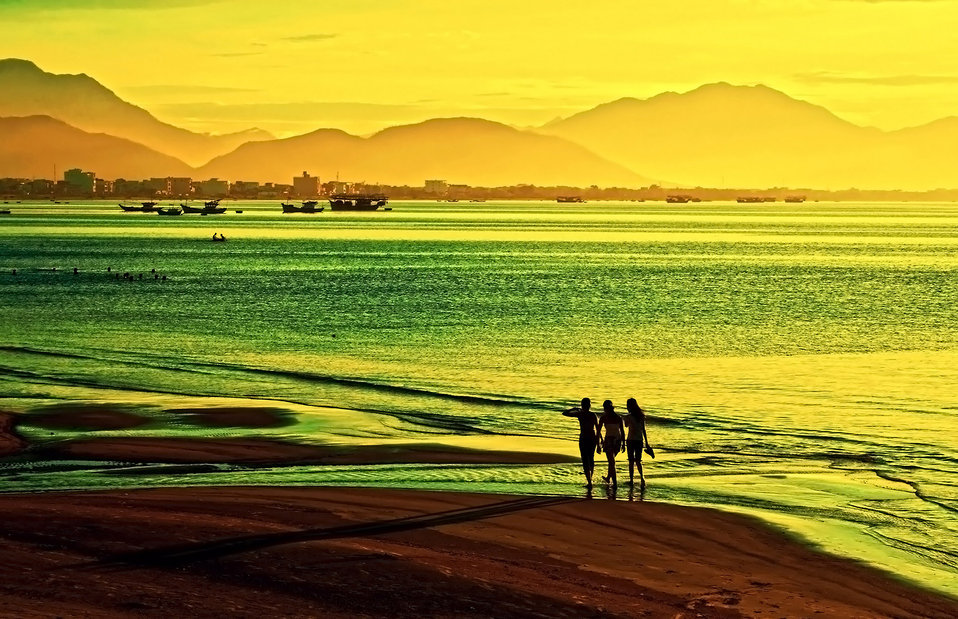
Walking on the beach

Sunset on the bay of danang, central vietnam..